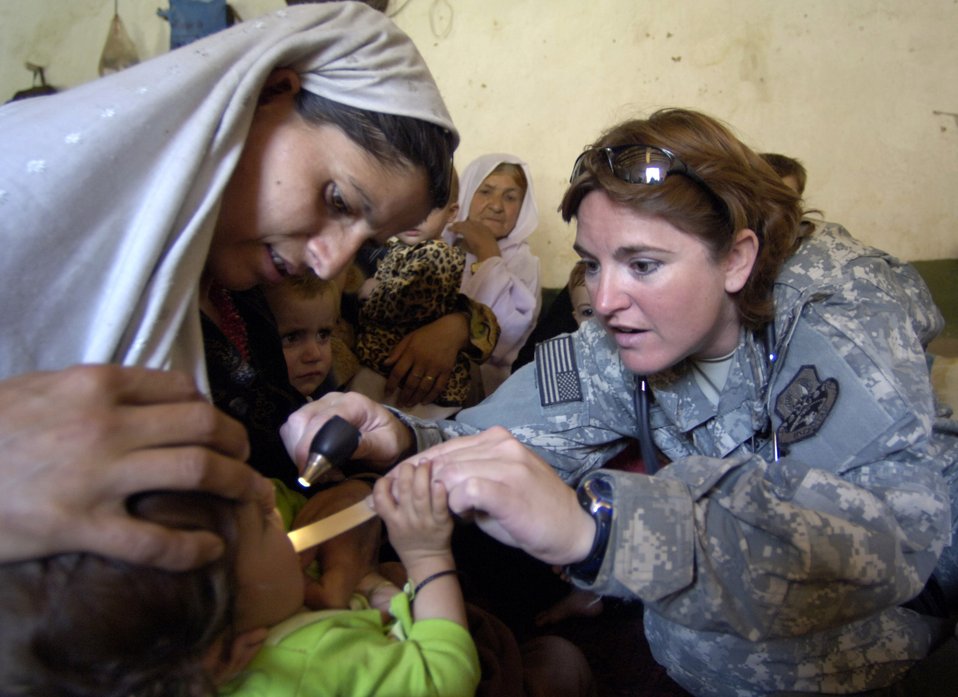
Airmen trek over mountains to deliver aid in Afghanistan

Panjshir Provincial Reconstruction Team member Tech. Sgt. Jenina Rose looks at a village girl's throat Aug. 7 in Roydara village in the Shutol district of Panjshir province, Afghanistan. Sergeant Rose is a medical technician deployed from Mountain Home Air Force Base, Idaho. She and her fellow PRT members made an 11-mile round-trip trek over a mountain pass and into a river valley to provide medical care to Afghans living in Roydara.